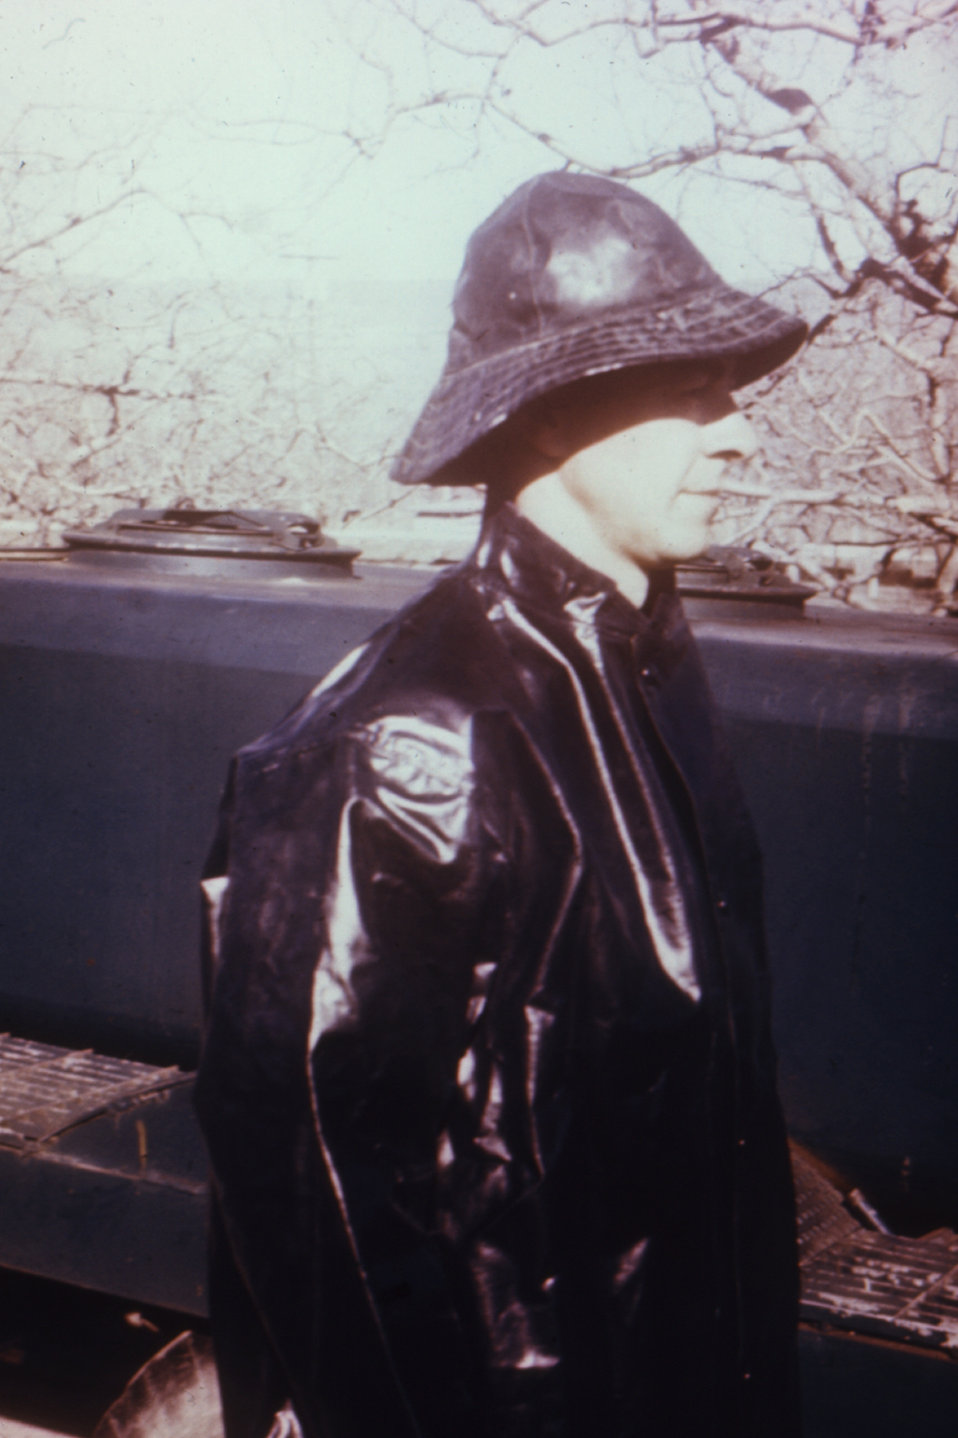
This individual was demonstrating the types of protective clothing worn by pesticide workers during the 1970's.